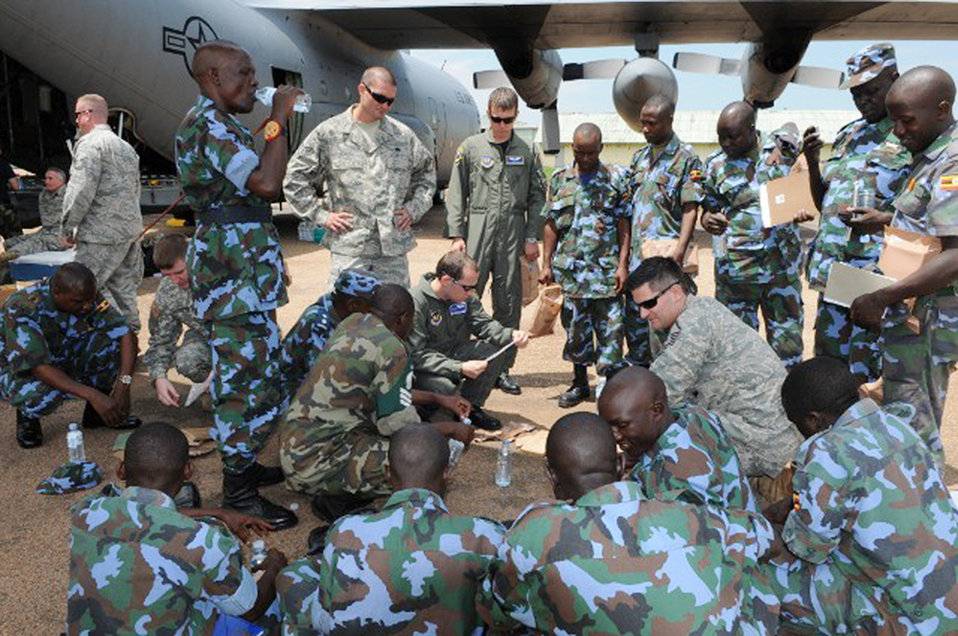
17th Air Force Airmen enhance Ugandan humanitarian airlift capability

Staff Sgt. Josh Woolridge and Master Sgt. Garrick Lewis explain how to prepare meals-ready-to-eat to members of the Ugandan Peoples Defense Forces during a Theater Security Cooperation event Aug. 26. Sergeant Woolridge is a 37th Airlift Squadron loadmaster at Ramstein Air Base, Germany. Sergeant Lewis is a drop zone support lead for 17th Air Force at Ramstein AB.